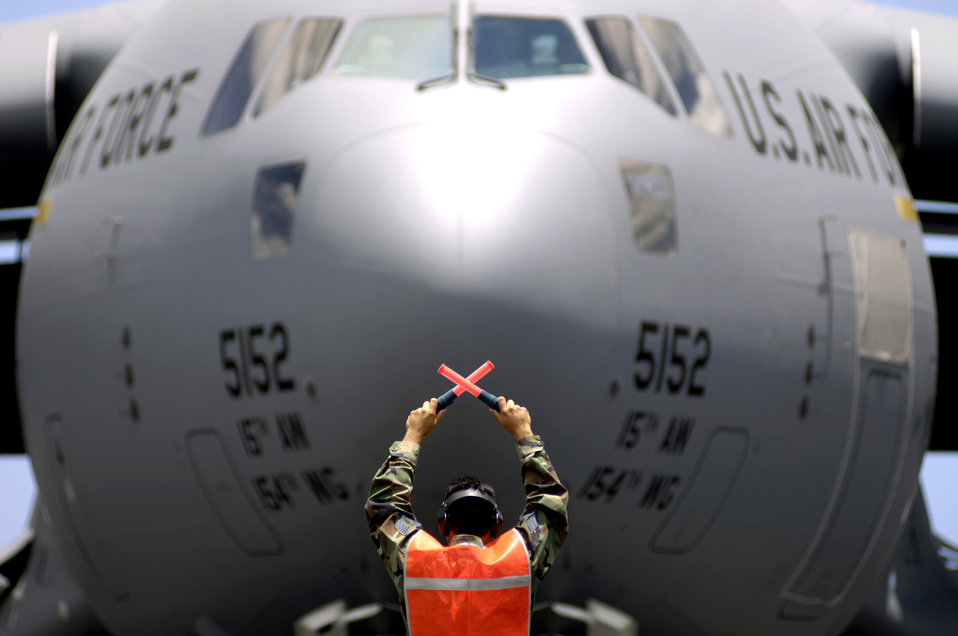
Hickam honors World War II vets with new C-17

Tech. Sgt. Ronald Timbreza marshals a C-17 Globemaster III to its parking spot at Hickam Air Force Base, Hawaii, on Wednesday, June 14. The